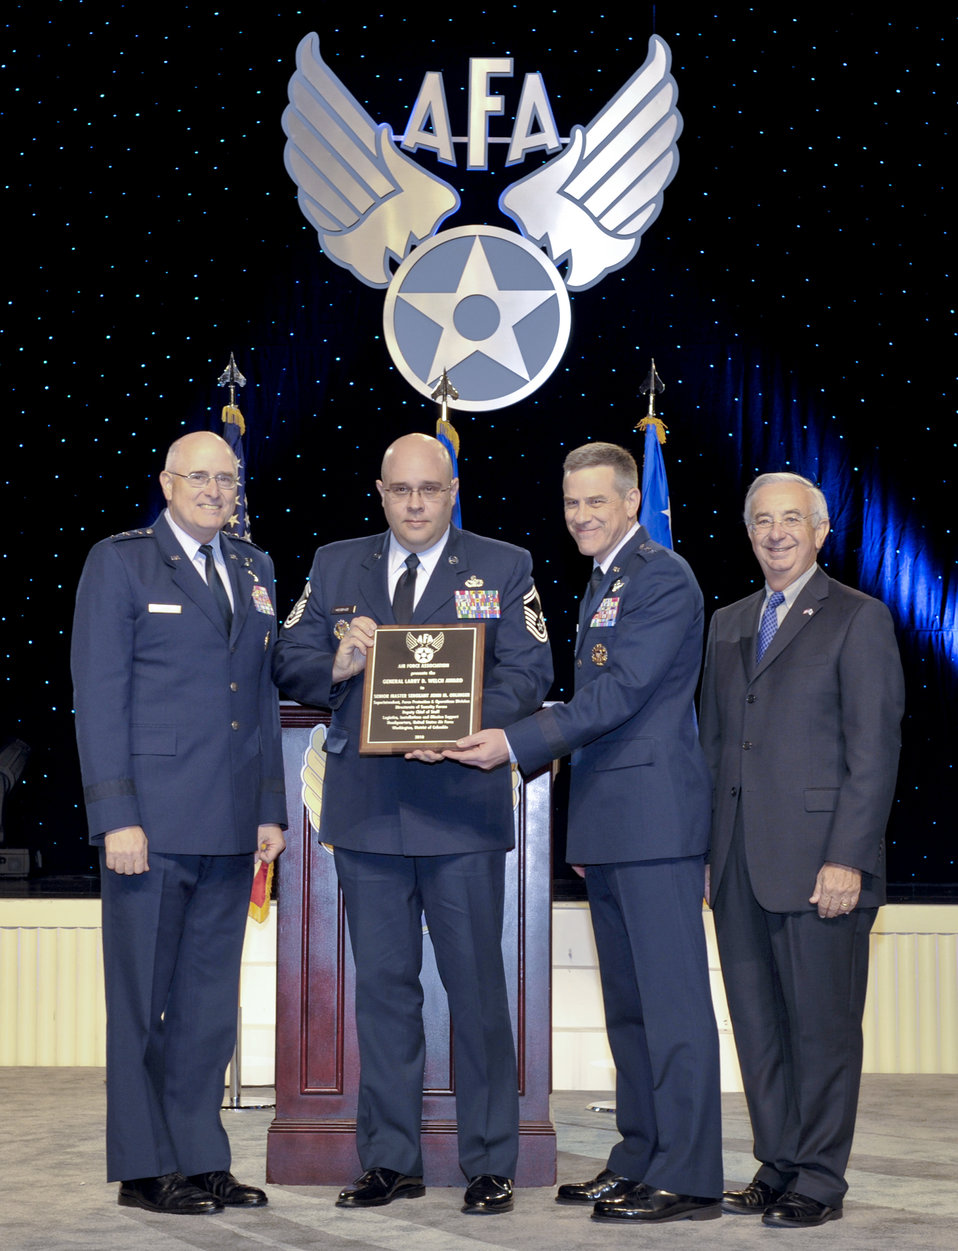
Nuclear enterprise individual recognized

Lt. Gen. Loren M. Reno (left), Maj. Gen. William A. Chambers (center right), and Joseph Sutter (right) present the first Gen. Larry D. Welch award for individual excellence and achievement in the Air Force nuclear enterprise to Senior Master Sgt. John M. Oblinger Sept. 13, 2010, at the 2010 Air Force Association Air and Space Conference and Technology Exposition at National Harbor in Oxon Hill, Md. Sergeant Oblinger is the superintendent of the force protection and operations division for installations and mission support. He constructed the first Air Force Nuclear Security Roadmap and led the rewrite of the Air Force Nuclear Security Manual in a record 140 days, a process that could take more than 18 months to complete. General Reno is the deputy chief of staff for installations and mission support. General Chambers is the assistant chief of staff for strategic deterrence and nuclear integration. Mr. Sutter is the president of the Air Force Association.